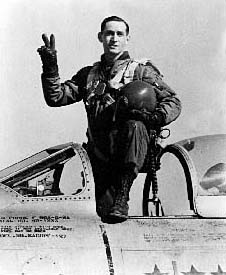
Lt. Col. George A. Davis Jr.

1950s -- Lt. Col. George A. Davis Jr.